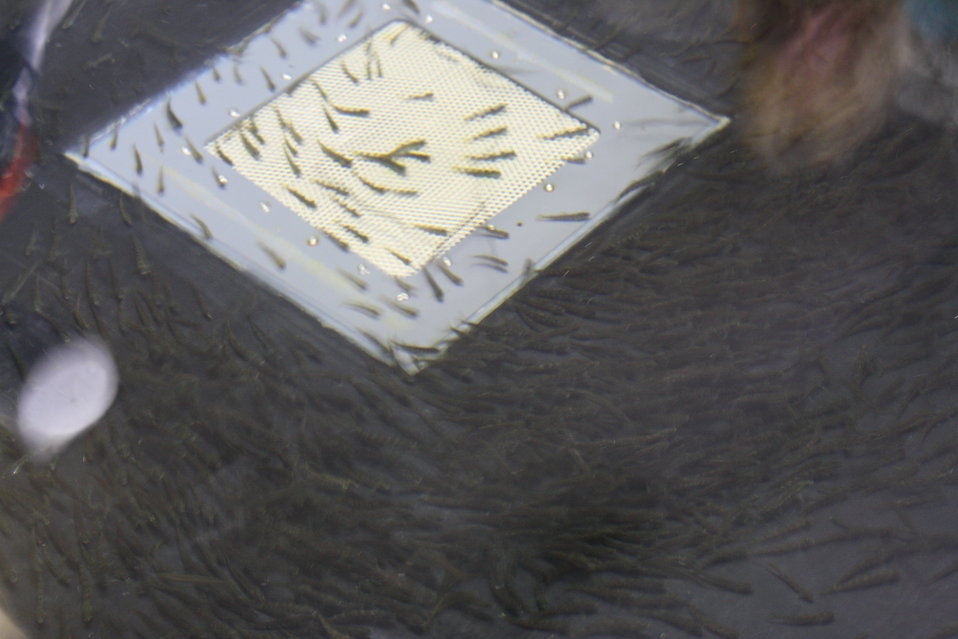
Nashua National Fish Hatchery welcomes regional office employees

Salmon fry in tank.